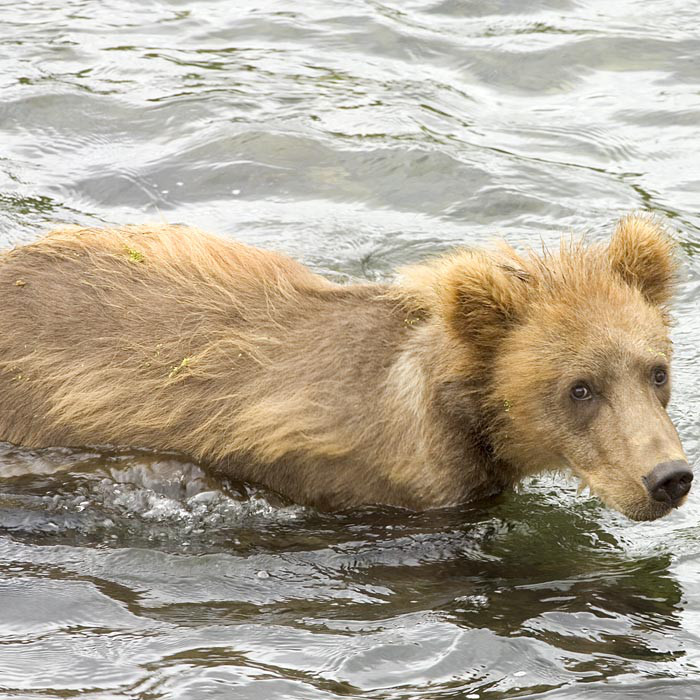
Brown Bear Cub

Kodiak National Wildlife Refuge, Alaska
Steve Hillebrand/USFWS

A Brown Bear cub in Kodiak National Wildlife Refuge in Alaska.